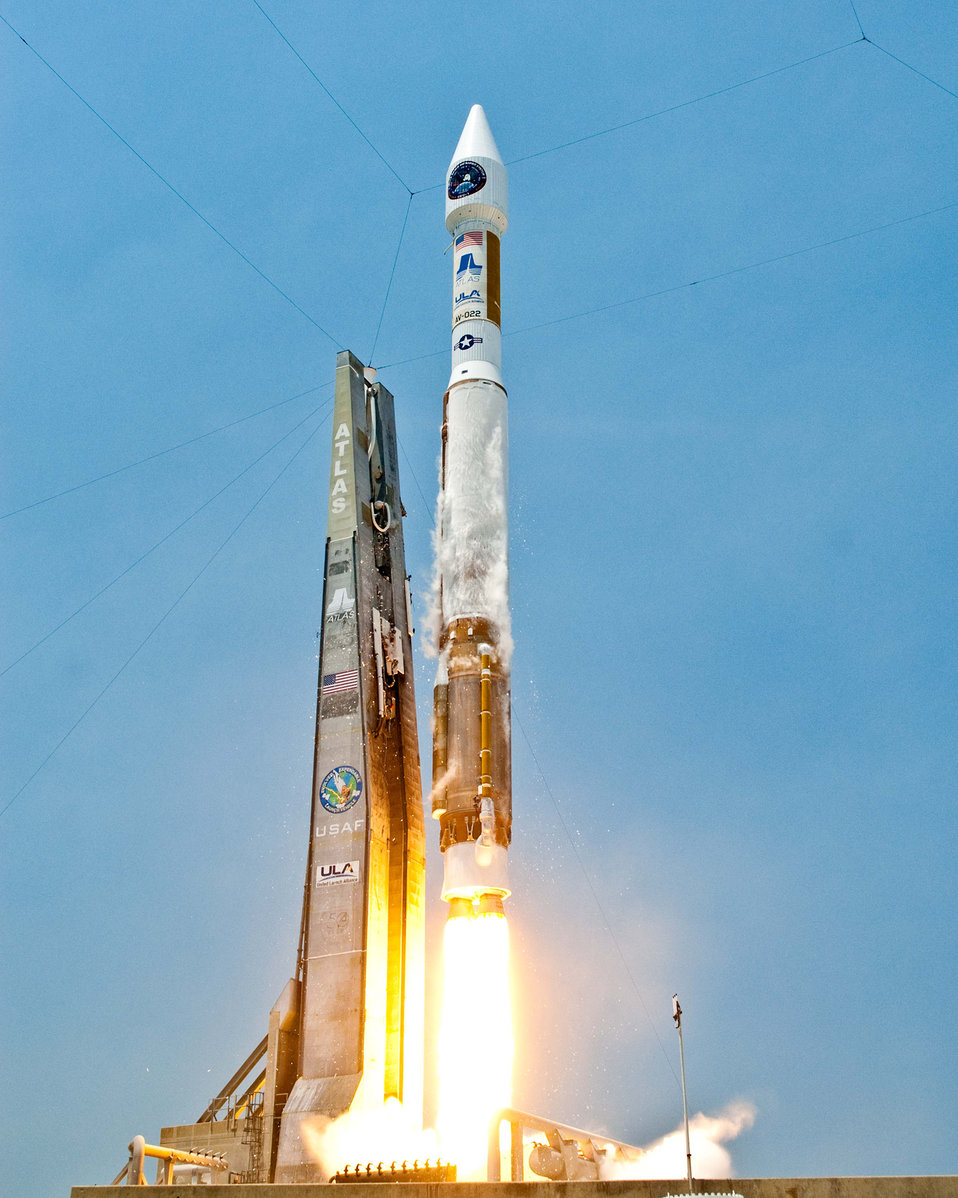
Satellite successfully launched

An Air Force Space Based Infrared Systems GEO-1 payload is launched aboard a United Launch Alliance Atlas V rocket May 7, 2011, from Space Launch Complex 41 at Cape Canaveral Air Force Station, Fla. SBIRS is designed to provide global, overhead, persistent, infrared surveillance capability to meet 21st century demands in mission areas including missile warning, missile defense, technical intelligence and battlespace awareness.